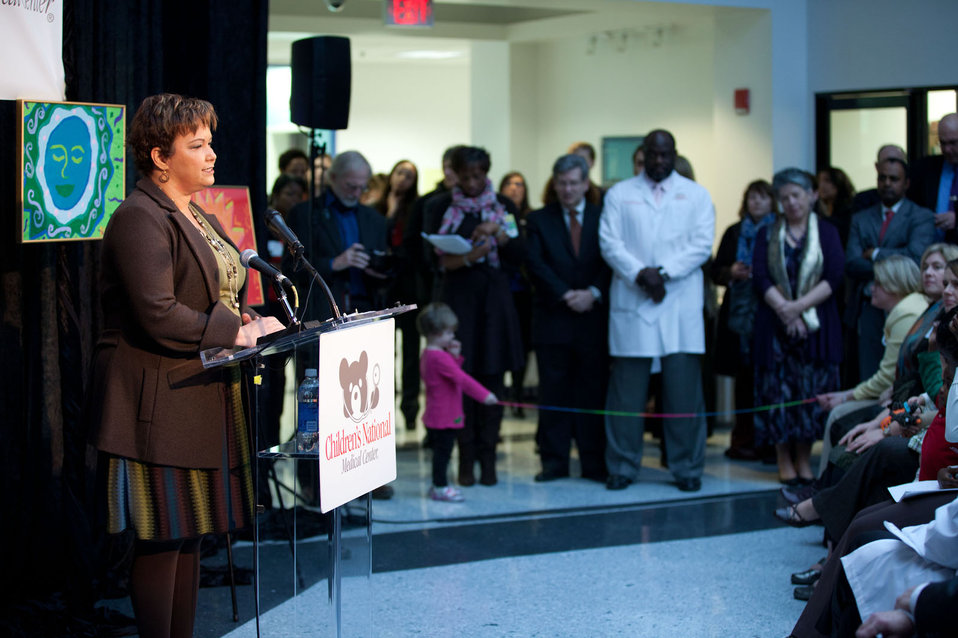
December 20, 2011 Doctors and families gather in to hear Clean Air Act announcement

Administrator Lisa P. Jackson gives remarks to audience of families, public health experts marking the finalization, 20 years in the making, of the new Mercury and Air Toxics Standards.

The Mercury and Air Toxics standards are the first national standards to protect American families from power plant emissions of mercury and toxic air pollution like arsenic, acid gas, nickel, selenium, and cyanide. EPA estimates that the new safeguards will prevent 11,000 premature deaths and 4,700 heart attacks a year.

The standards will also help America' children grow up healthier -- preventing 130,000 cases of childhood asthma symptoms and about 6,300 fewer cases of acute bronchitis a month children each year.